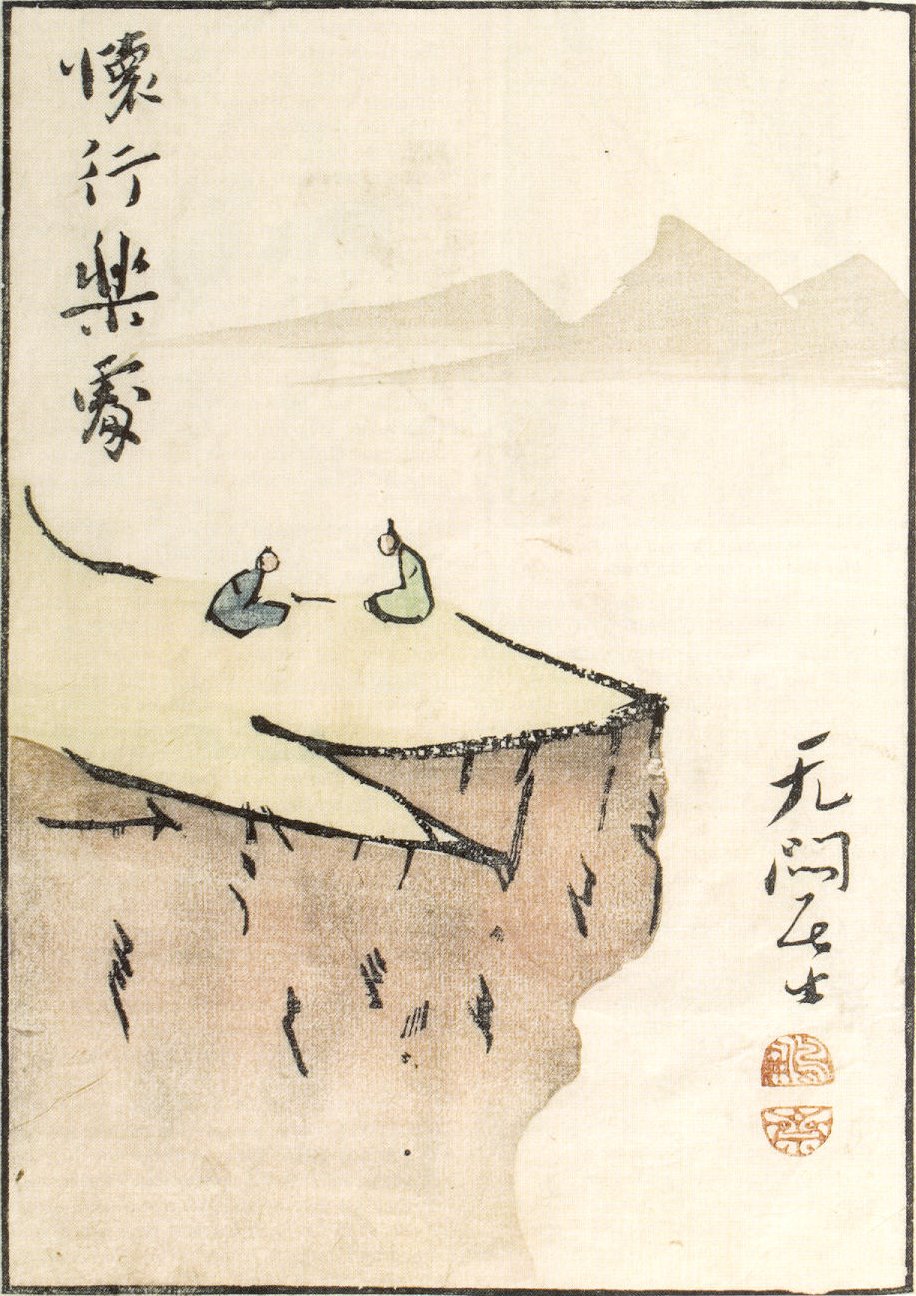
'Yearning for a Pleasurable Place' in 'Mountains of the Heart' by Kameda Bôsai, 1816. The signature reads 'Kitsumon Koji' (an art name), but the seal reads 'Bôsai'